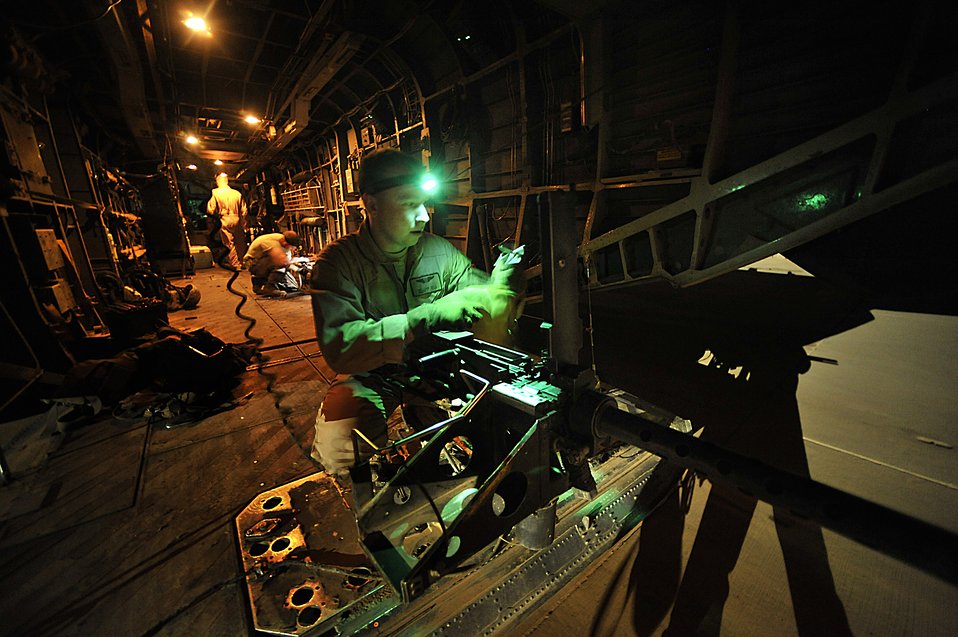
The last mission

Aerial gunner Staff Sgt. William Sell of the 20th Expeditionary Special Operations Squadron checks his 50-caliber machine gun before the last combat mission of the MH-53 Pave Low helicopter Sept. 27 in Iraq. The Pave Low was retired after nearly 40 years of service to the Air Force.